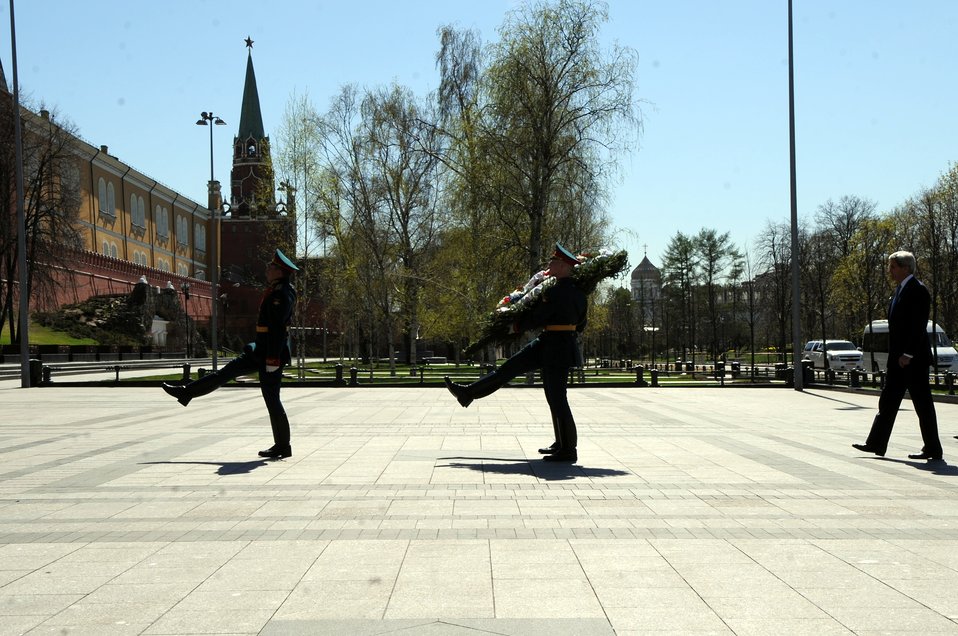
Secretary Kerry Lays a Wreath at the Kremlin

U.S. Secretary of State John Kerry lays a wreath at the Tomb of the Unknown Soldier at the Kremlin in Moscow, Russia, on May 7, 2013.